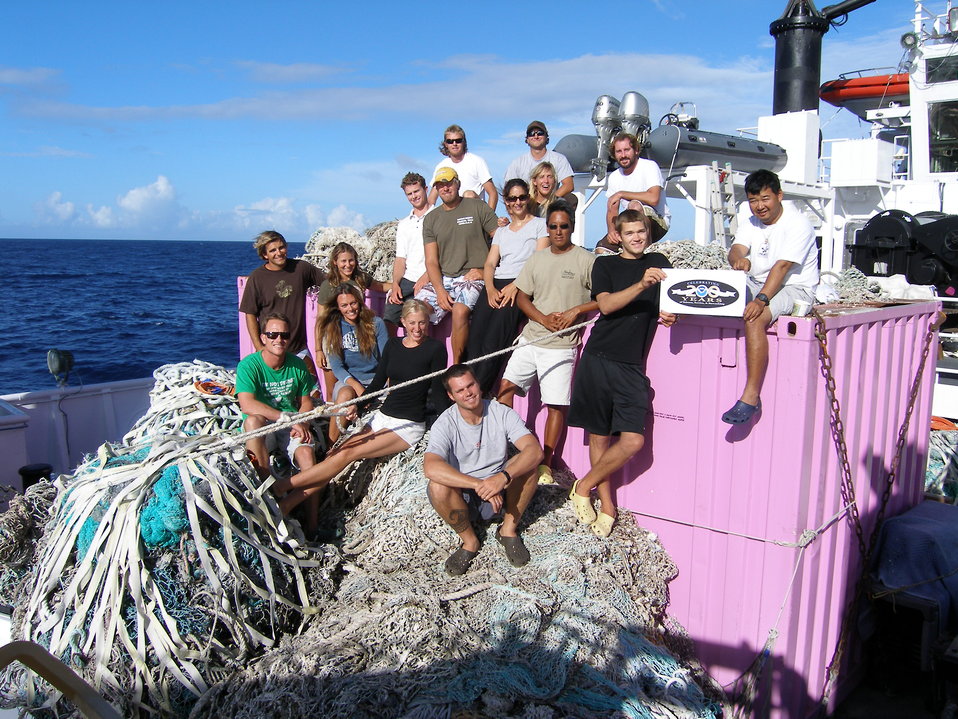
Aloha from the Pacific Island's Fisheries Science Center Marine Debris Program! Twenty four metric tons of abandoned lines and ghost nets were collected from the waters of Laysan Island, Kure Atoll and Pearl and Hermes Atoll in he Papahanaumokuakea Marine National Monument (Northwestern Hawaiian Islands) over sixteen days of field operations.